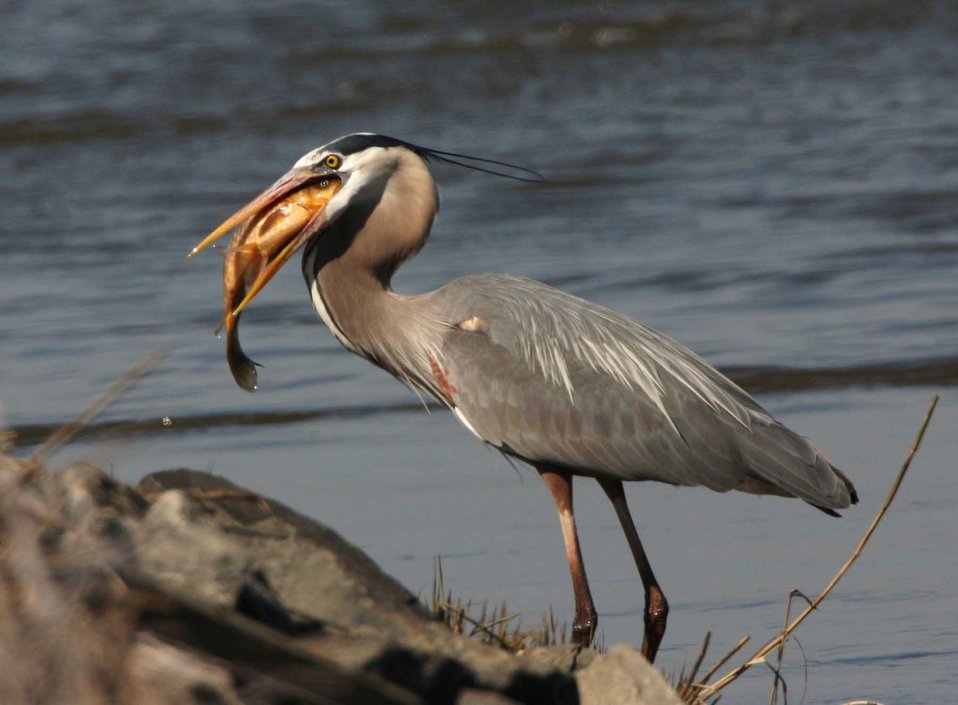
Great Blue Heron with big fish

Great blue heron holding a fish in its mouth at John Heinz National Wildlife Refuge in Philadelphia, Pennsylvania.